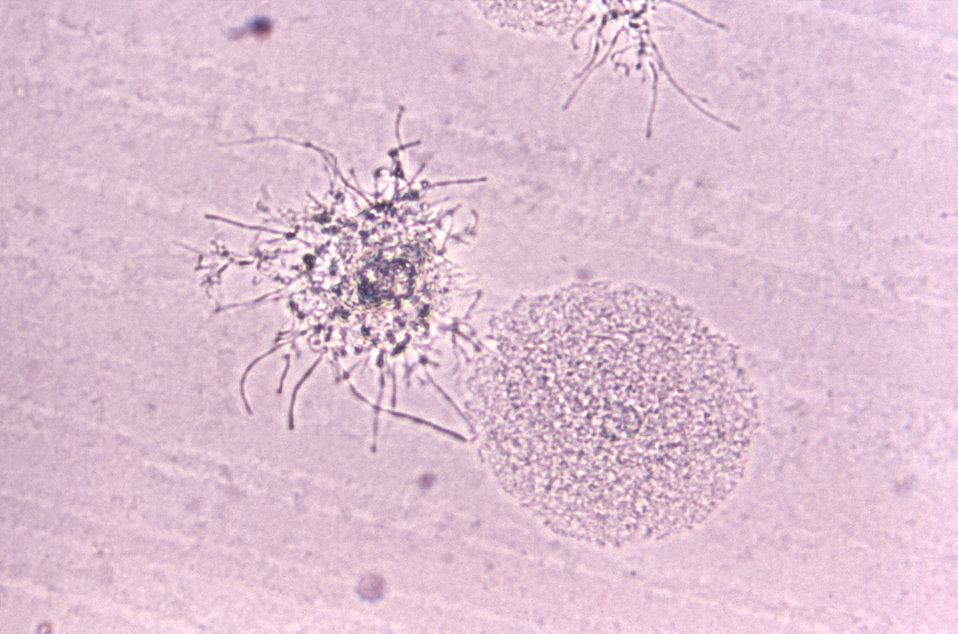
Cultivated for 48hrs on medium of brain heart infusion (BHI) agar, under a magnification of 380X, this photomicrograph revealed some of the ultrastructural morphology displayed by Gram-positive Actinomyces sp. bacterial microcolonies.